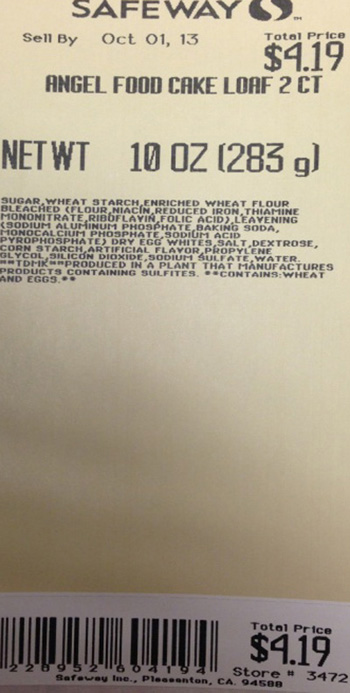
RECALLED – Angel Food Cakes

September 26, 2013 – Product Recall – Safeway Recalls Several Varieties of Angel Food Cake Due to Undeclared Soy and Milk Allergens.